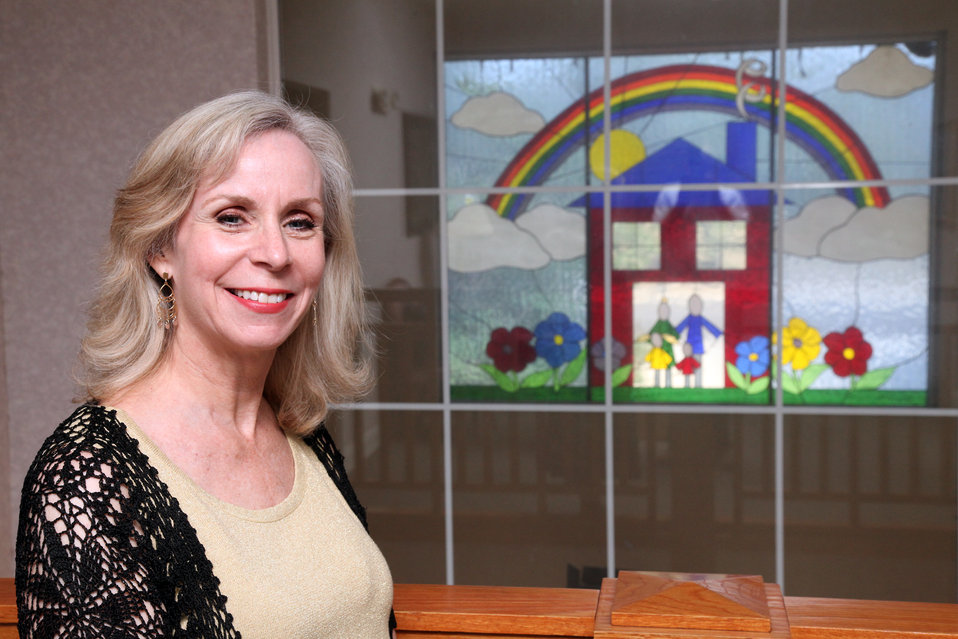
Ronald McDonald House

The Ronald McDonald houses in San Antonio serve as a home-away-from-home for families with children being treated at medical facilities in San Antonio. Pat Bivin, executive director of the Ronald McDonald House of San Antonio, says that any money the houses can save by being more energy efficient goes right back to the families that they are serving. City Lights saved the organization an estimated 105,500 kilowatt-hours and $8,600 on electricity bills each year.